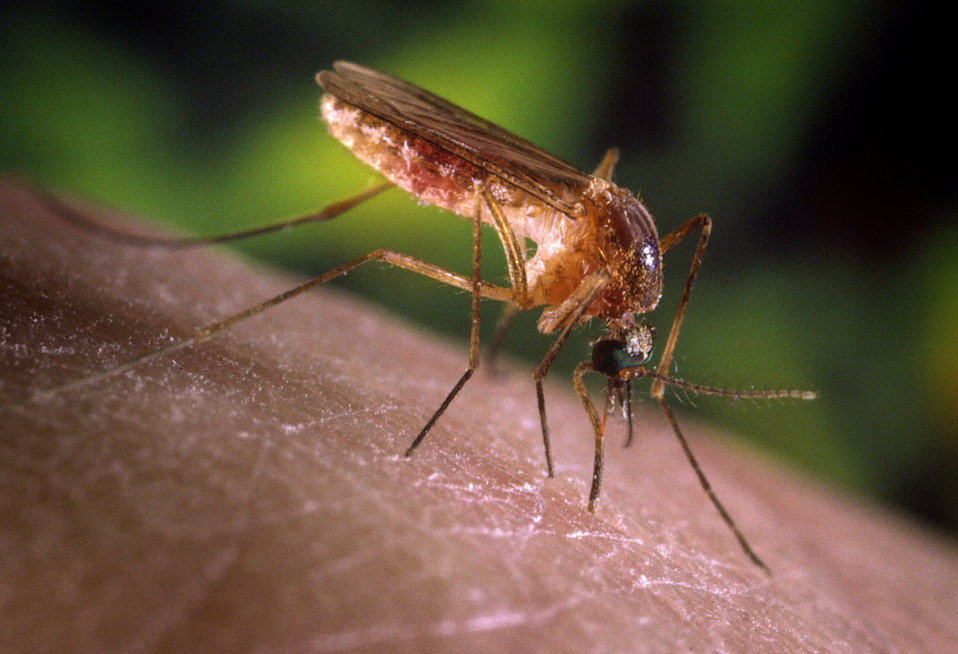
A Culex quinquefasciatus mosquito on a human finger.